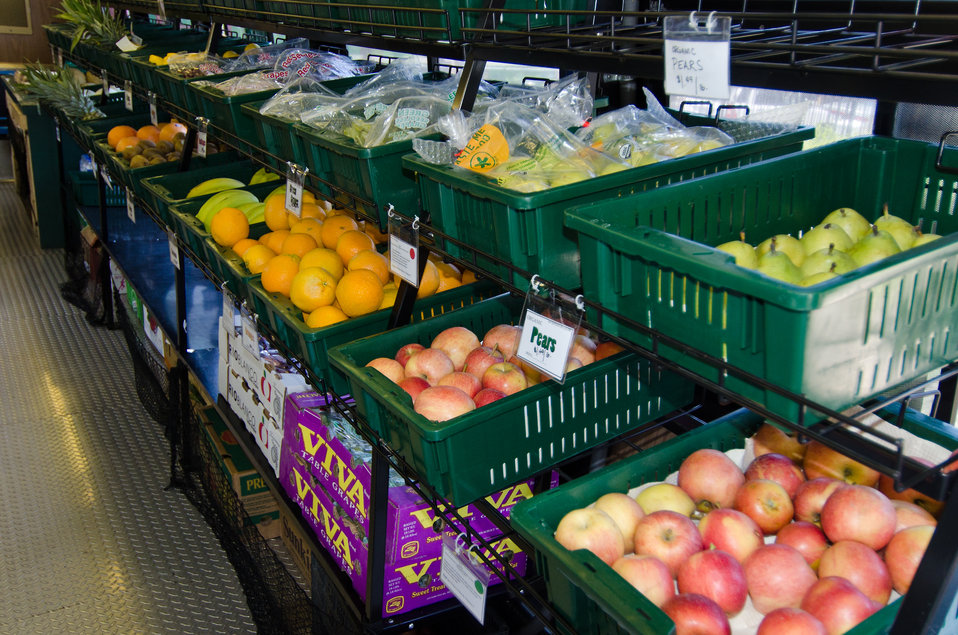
Fresh fruits and vegetables on the Fresh Moves Mobile Market Bus, a renovated Chicago Transit Authority Bus, the bus delivers fresh, affordable fruits and vegetables to the Austin and North Lawndale neighborhoods. The neighborhoods have limited access to fresh produce. During a press event in Chicago, Illinois on Friday June 8, 2012 Agriculture Secretary Tom Vilsack highlighted the Obama administration efforts to increase access to healthy food in communities. Secretary Vilsack also commended Chicago Mayor Rahm Emanuel’s commitment to healthy food access and announced United States Department of Agriculture support for the expansion of mobile markets in Chicago, as well as a research project to assess the impact of mobile markets as a strategy to increase healthy food access in rural and urban communities.